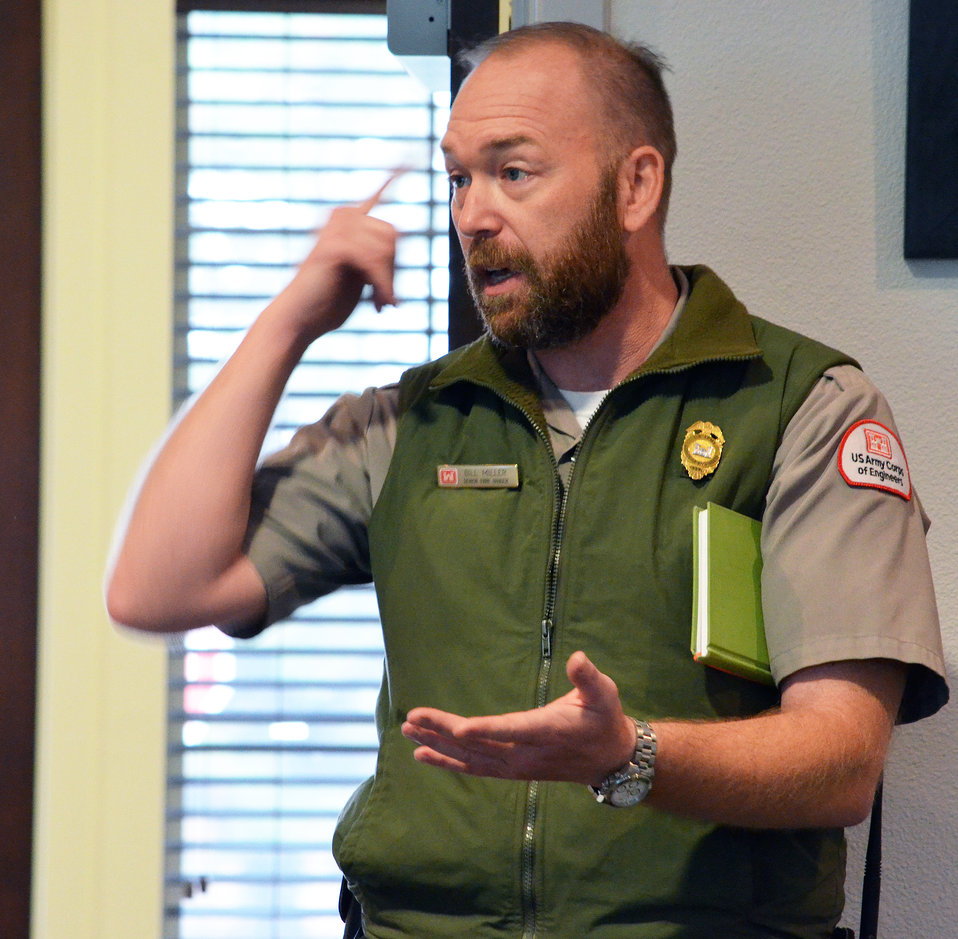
Orland emergency response exercise

Bill Miller, senior park ranger at Black Butte Lake, U.S. Army Corps of Engineers Sacramento District, helps facilitate discussion during the simulated flood event exercise. The U.S. Army Corps of Engineers Sacramento District joined local, state and other federal agencies in Orland, Calif., Nov. 20, to practice emergency response coordination for use in a regional flood emergency. The desktop exercise provided an opportunity for face-to-face communication between emergency agency personnel.